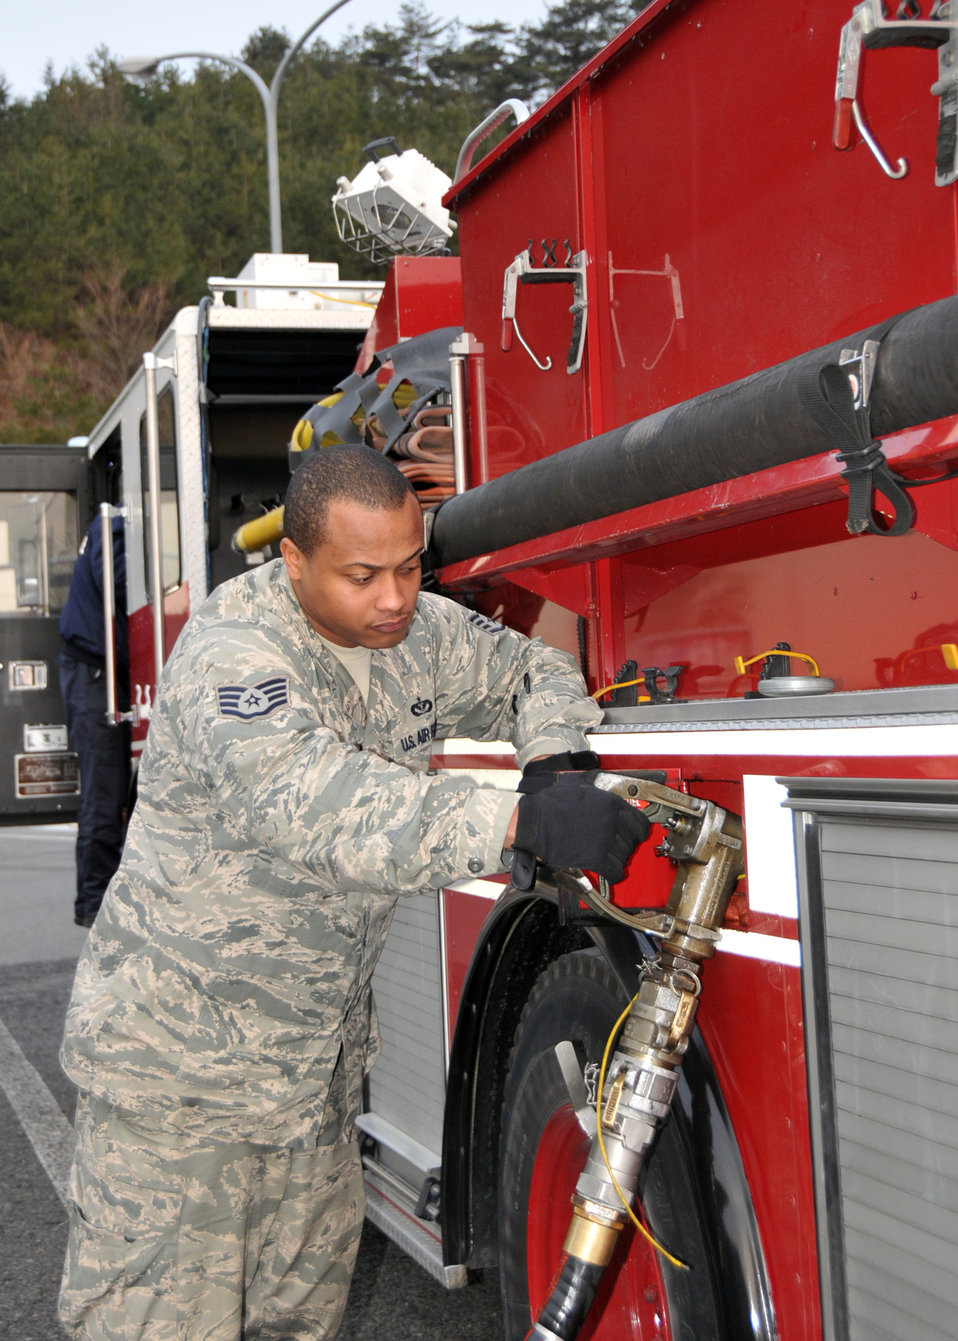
Yokota extends help to firefighters in Fukushima

Staff Sgt. Larry Gee refuels a fire truck from Yokota Air Base, Japan, to be delivered to firefighters in Fukushima, Japan, March 15, 2011, at a rest stop. The truck will be used to assist in recovery efforts in response to the earthquake and tsunami March 11. Sergeant Gee is firefighter assigned to the 374th Civil Engineer Squadron.